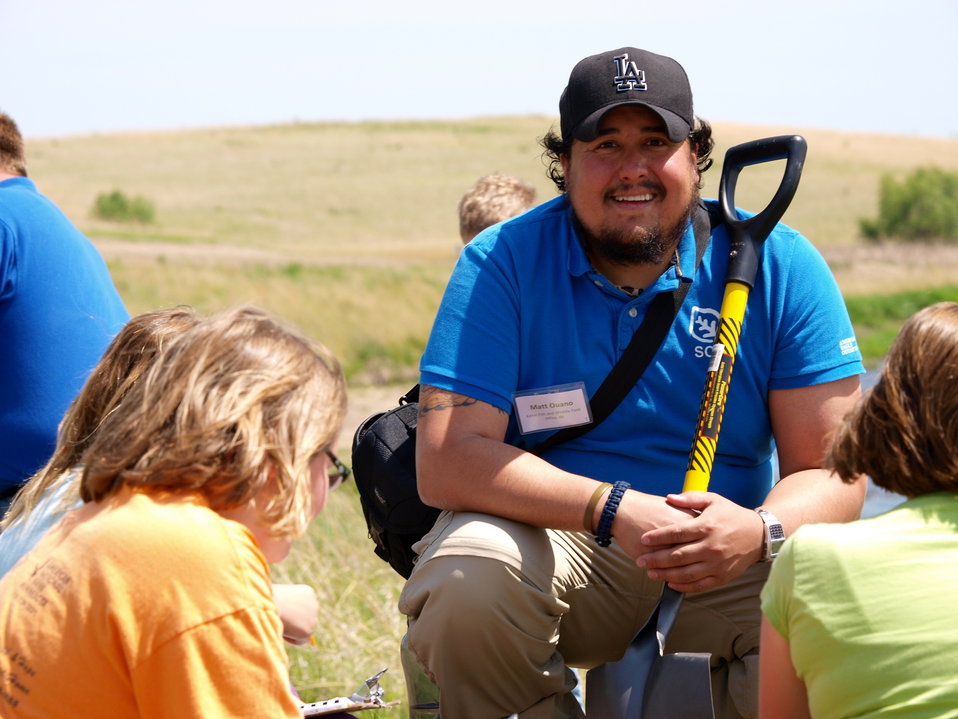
CDIP 2012 Fergus Falls

Matt, getting into it with the 4th Graders